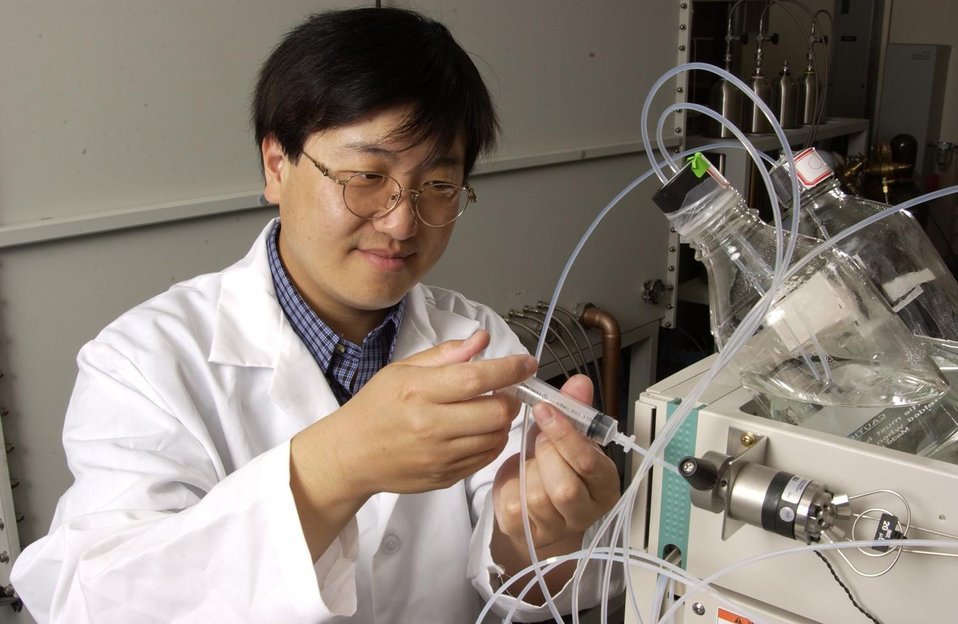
AMES LAB CHEMIST INJECTS A SAMPLE OF PRODUCTS SYNTHESIZED BY A GATE KEEPER-FUNCTIONALIZED MESOPOROUS NANOCATALYST INTO A HIGH PERFORMANCE LIQUID CHROMATOGRAPHY APPARATUS.

THE HPLC ANALYZES THE YIELD AND PURITY OF THE DESIRED PRODUCT. SCIENTISTS ARE DESIGNING AND PREPARING A NEW GENERATION OF HIGHLY SELECTIVE AND EFFICIENT CATALYSTS THAT CAN BE TAILORED TO SPECIFIC APPLICATIONS. CATALYSTS ARE SUBSTANCES THAT SPEED UP THE RATES OF CHEMICAL REACTIONS WITHOUT GETTING USED UP IN THOSE REACTIONS THEMSELVES. DUE TO THEIR HETEROGENEOUS NATURE, MESOPOROUS INORGANIC MATERIALS ARE USED TO ENHANCE THE CATALYTIC PROCESS AND DEVELOP A WIDE RANGE OF NOVEL CATALYTIC SYSTEMS.